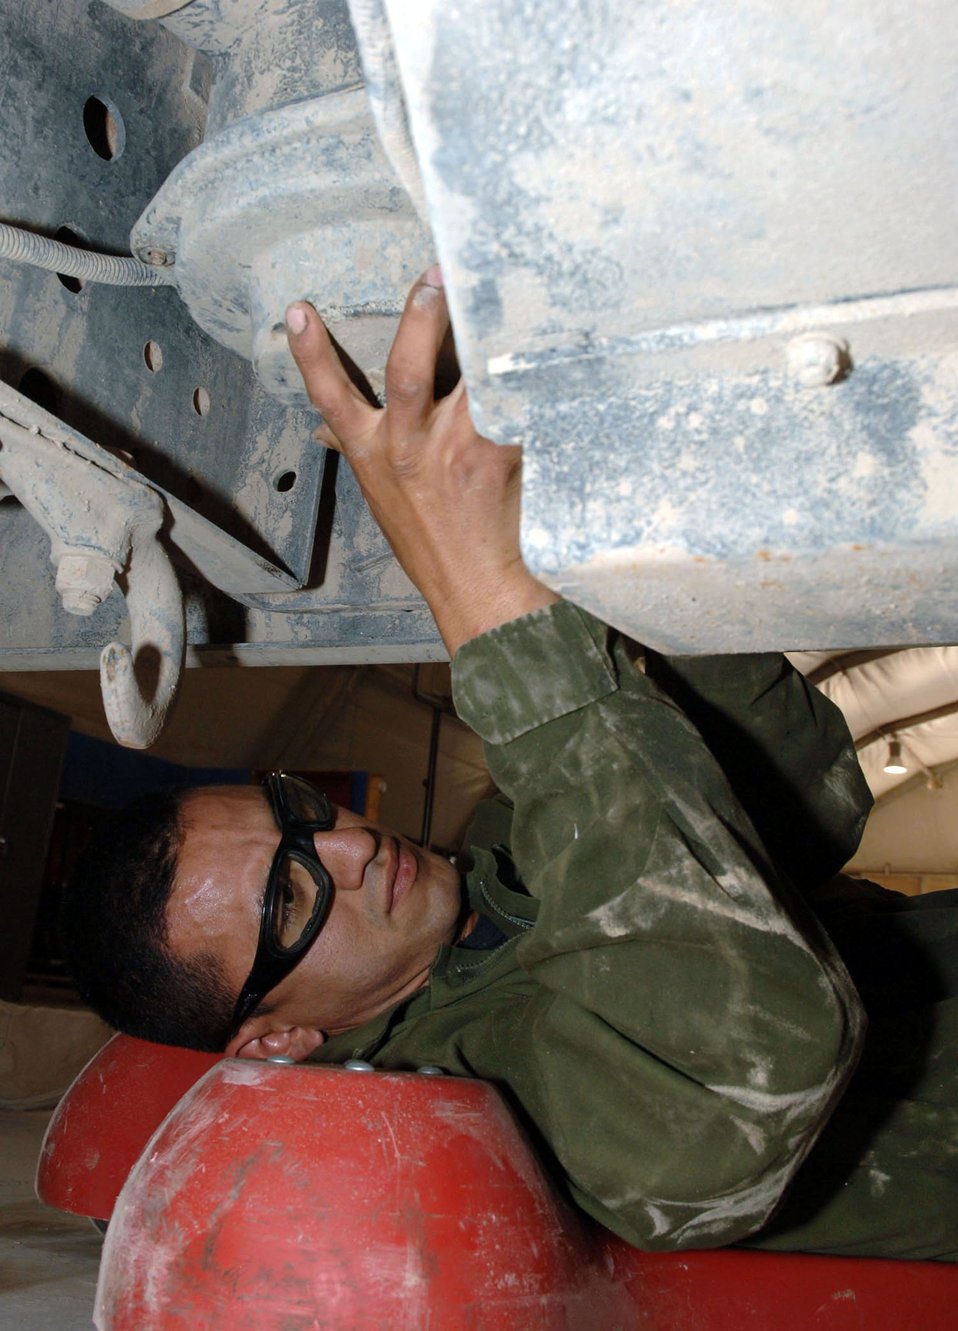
Mechanics keep fleet rolling through dust, mud

Staff Sgt. Oscar Figueroa works on a bus at Sather Air Base, Iraq, on Monday, May 1, 2006. He is a mechanic with the 447th Expeditionary Logistics Readiness Squadron vehicle maintenance flight.